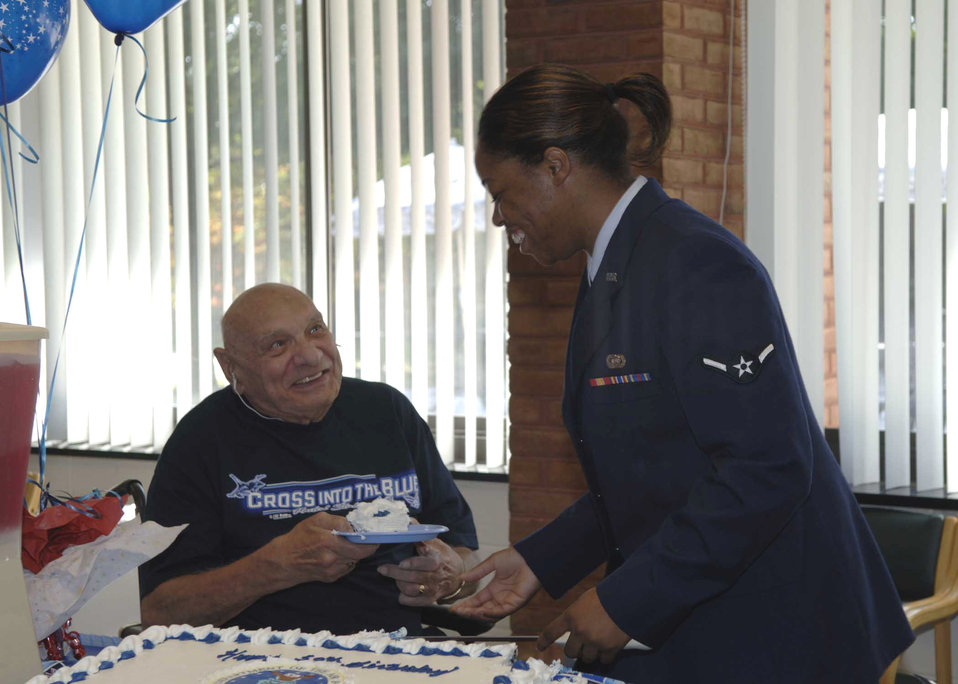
Airmen visit, share stories with veterans

Airman Melissa Drake hands a piece of cake to retired Tech. Sgt. Cloid Sowell at the Charlotte Hall Veterans Home in Charlotte Hall, Md., Sept. 18. The Airman and the veteran participated in the cake-cutting as the youngest Airman and oldest Air Force veteran there. Airman Drake is assigned to the 89th Communications Squadron at Andrews Air Force Base, Md.